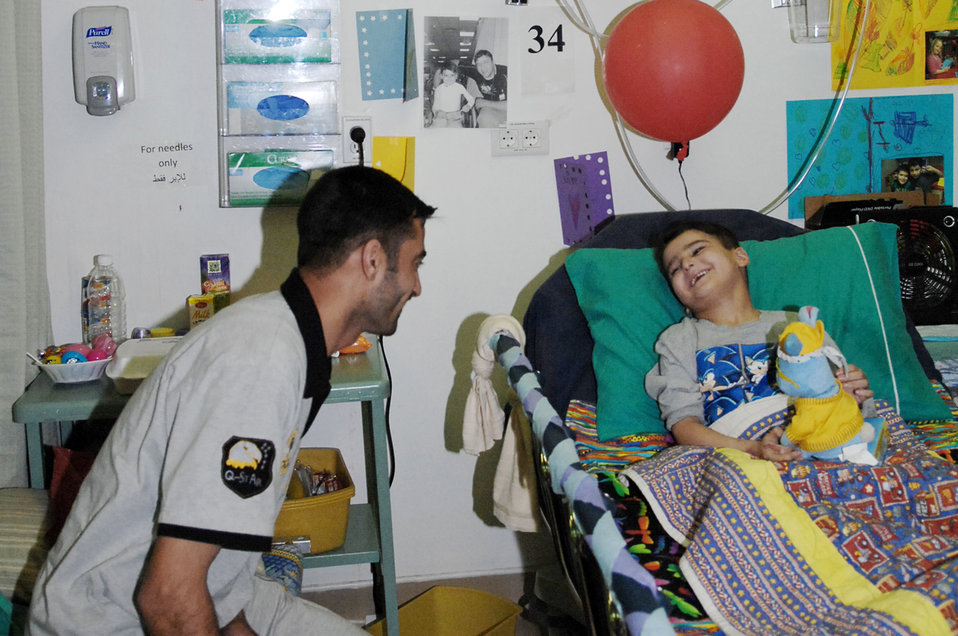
Balad medical team turns tragedy into triumph

Six-year-old Sajad Hany Shaker Mahmud, a survivor of an improvised explosive device attack, plays with a birthday gift with his father as they celebrate his 6th birthday while recovering April 1, 2010, at the Air Force Theater Hospital in Iraq. Sajad received multiple presents and birthday wishes from the medical staff who have taken care of him during his 72-day stay at the hospital.